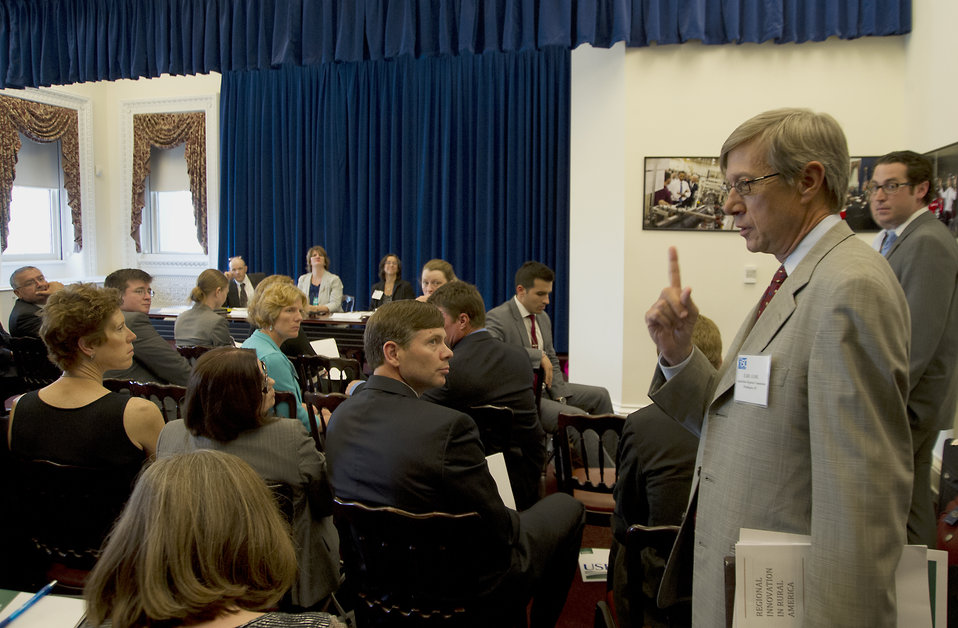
Earl Gohl, Federal Co-Chair of the Appalachian Regional Commission speaking at the White House Forum on Regional Innovation in Rural America at the Eisenhower Executive Office Building, in Washington D.C., on Wednesday, June 13, 2012.